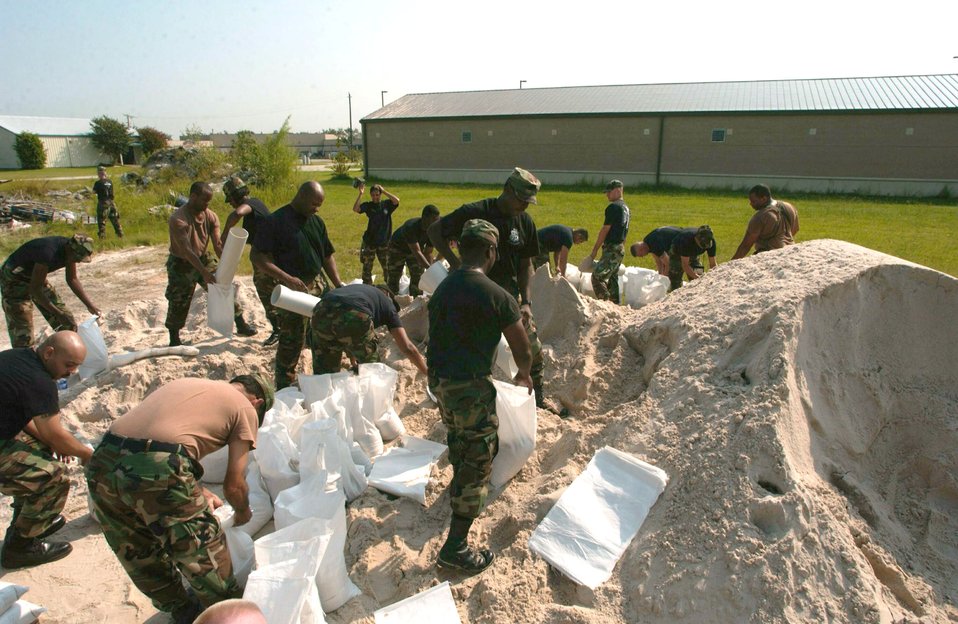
Preparing for the storm

ELLINGTON FIELD, Texas -- Airmen with the 147th Fighter Wing here fill sandbags Sept. 21 to protect buildings from flooding that Hurricane Rita is projected to bring. Rita is the third worst hurricane in recorded history and is expected to make landfall Sept. 24. Ellington Field is 17 miles southeast of Houston.